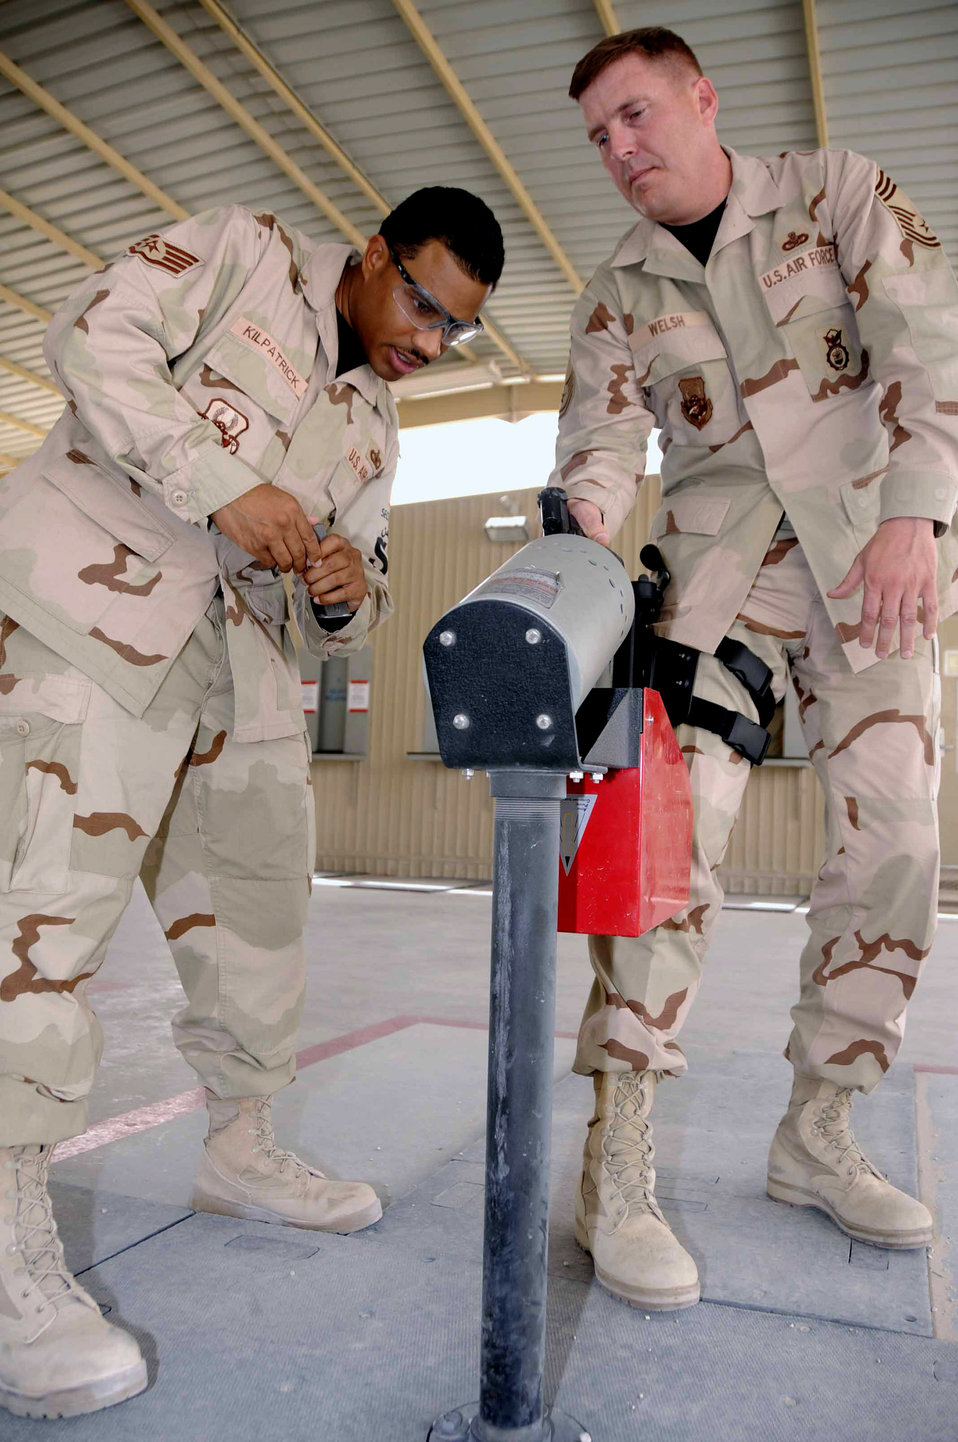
Deployed fathers find ways to keep in touch with families

Chief Master Sgt. Eric Welsh properly clears the barrel of his M-9 handgun June 12 at a Southwest Asian air base. Staff Sgt. Torrey Kilpatrick observes and double-checks the barrel as a safety precaution. Both are assigned to the 379th Expeditionary Security Forces Squadron.